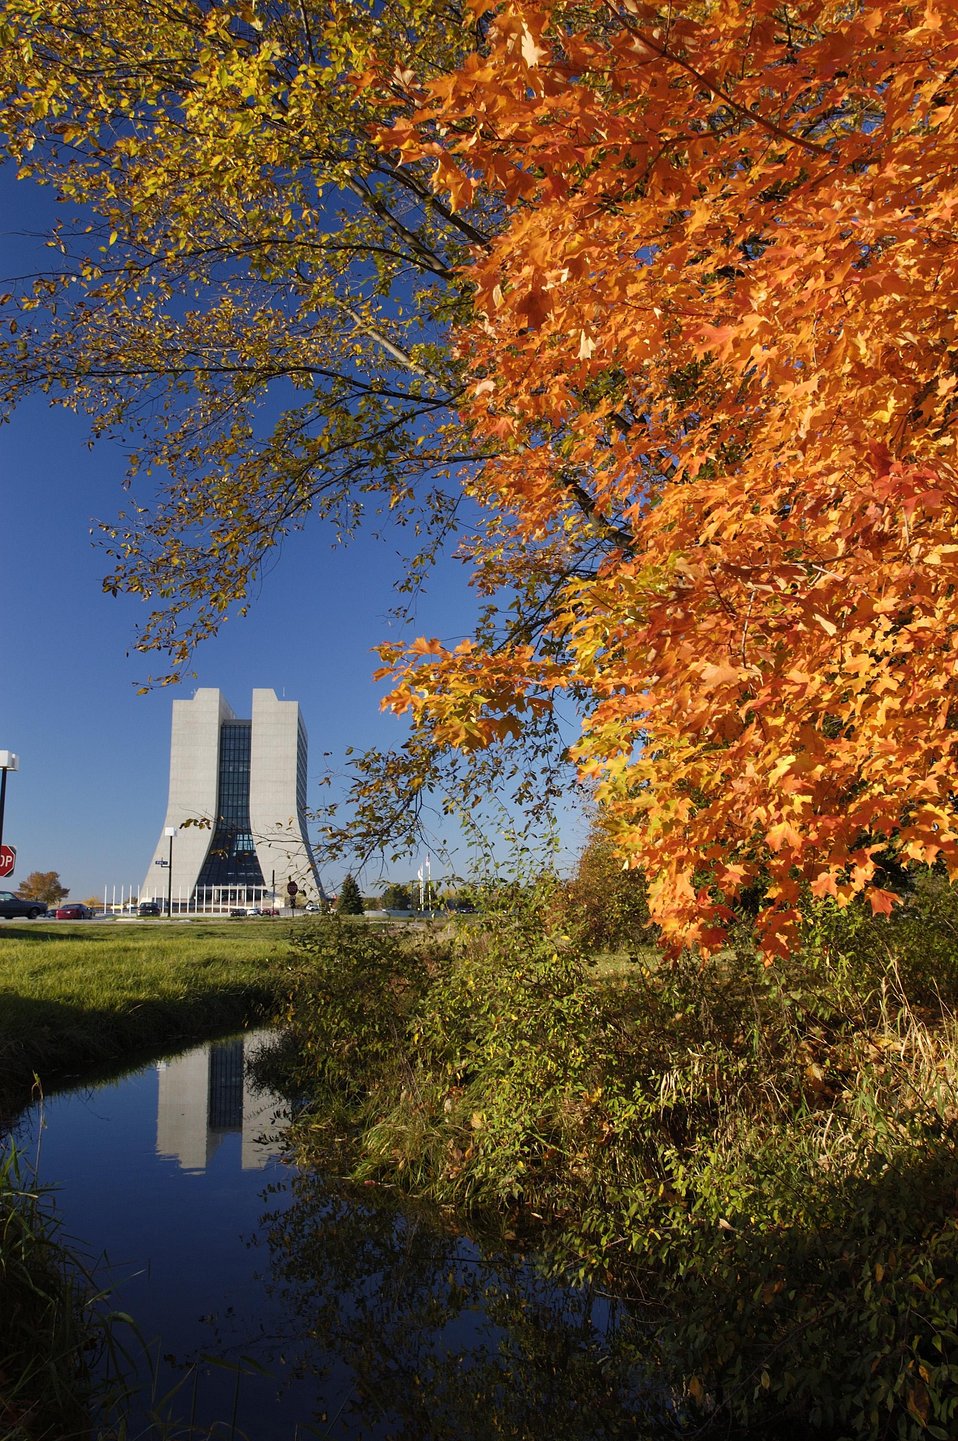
FALL COLORS AT FERMILAB WITH WILSON HALL IN THE BACKGROUND.

FERMI NATIONAL ACCELERATOR LABORATORY ADVANCES THE UNDERSTANDING OF THE FUNDAMENTAL NATURE OF MATTER AND ENERGY BY PROVIDING LEADERSHIP AND RESOURCES FOR QUALIFIED RESEARCHERS TO CONDUCT BASIC RESEARCH AT THE FRONTIERS OF HIGH ENERGY PHYSICS AND RELATED DISCIPLINES.